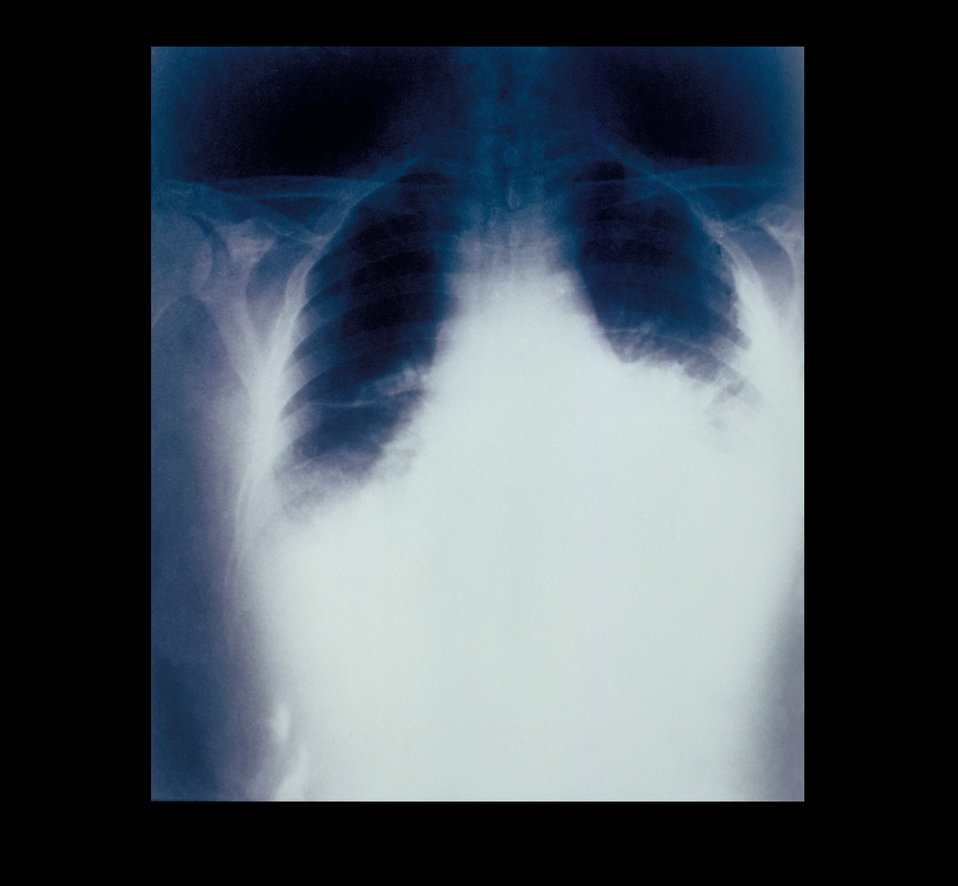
This anteroposterior (AP) chest radiograph showed a widened mediastinum due to inhalation anthrax, and was taken 22 hours before death.